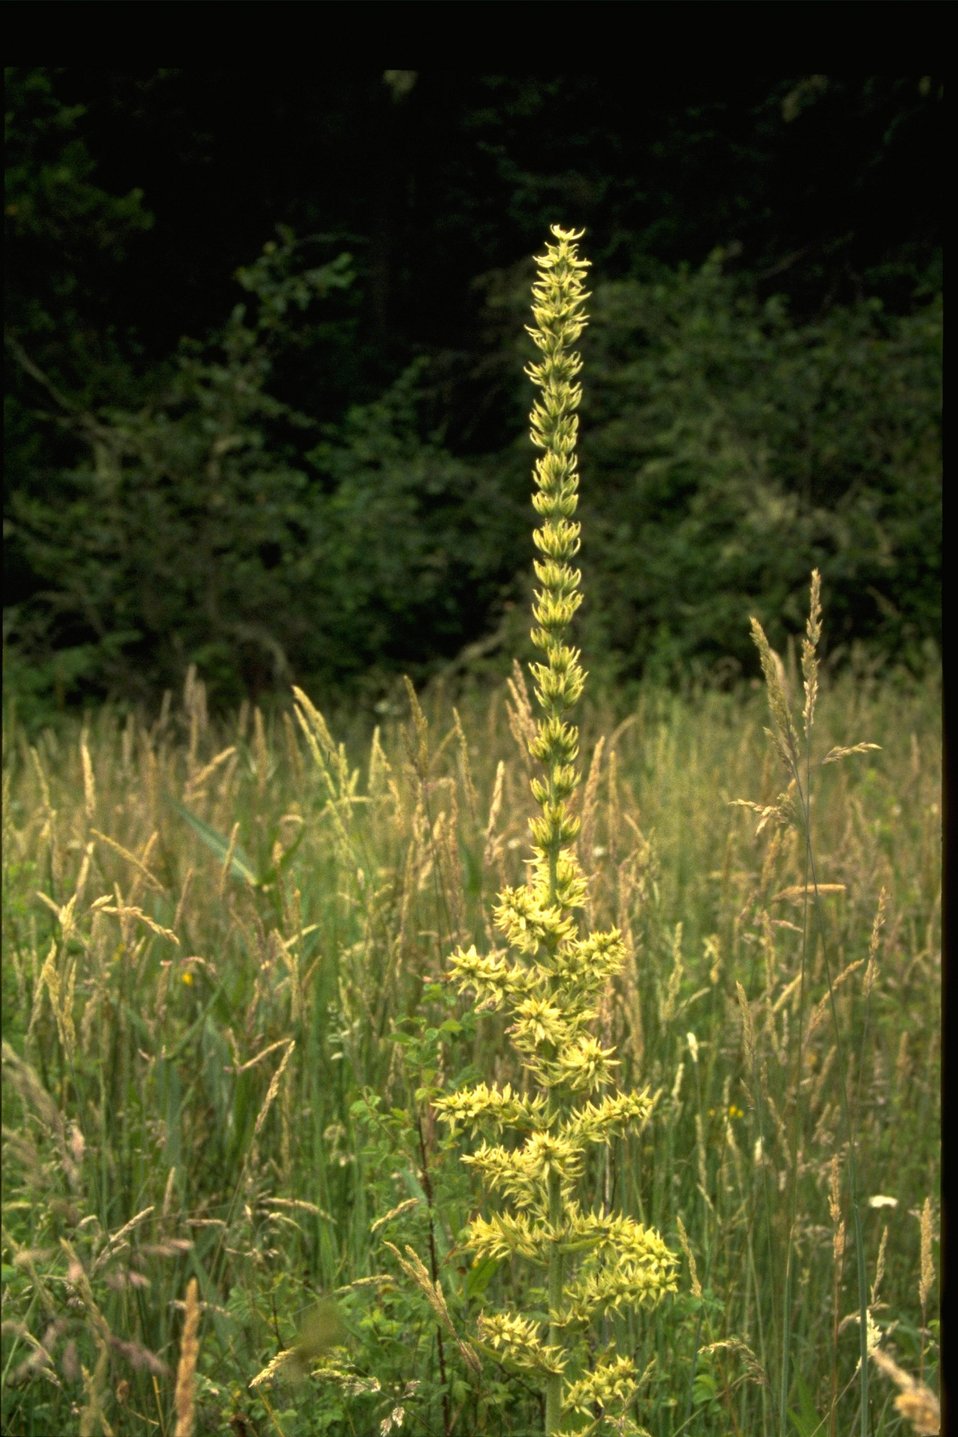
Farshot of Veratrum.